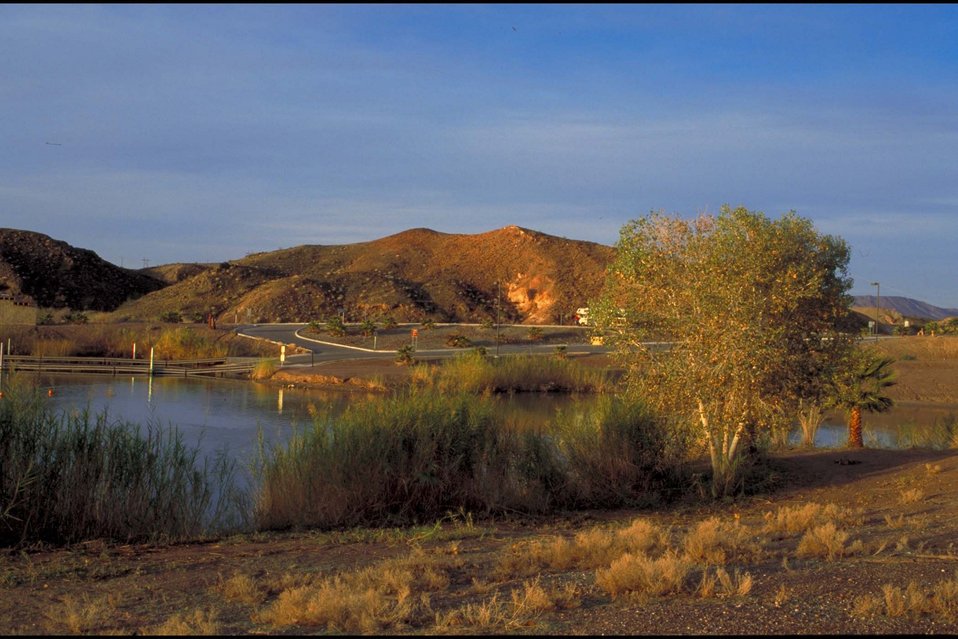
Boat ramp at sunrise at Squaw Lake Recreation Area